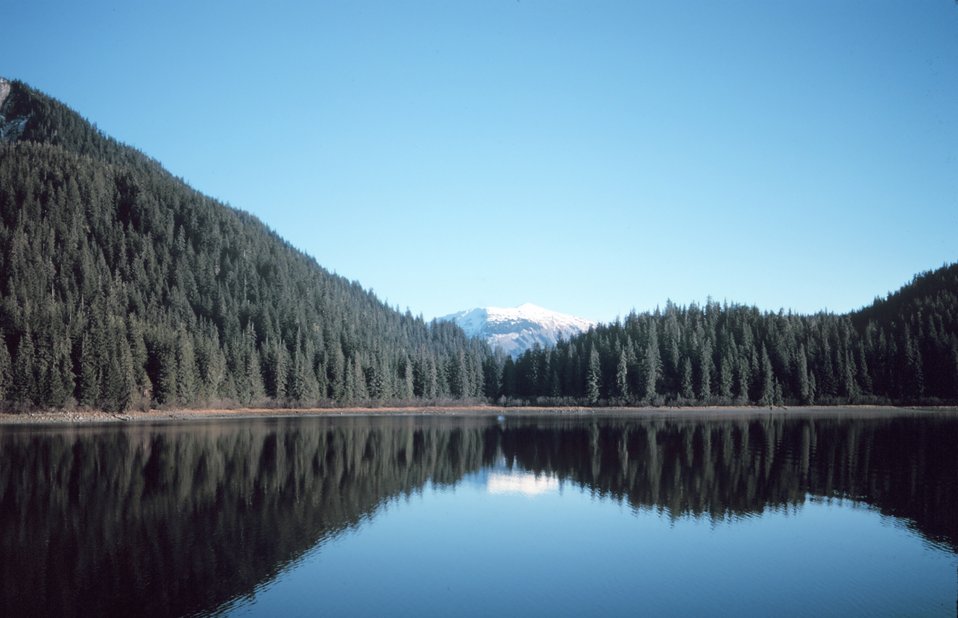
View to the north looking at The Portage at the headwaters of Tenakee Inlet.